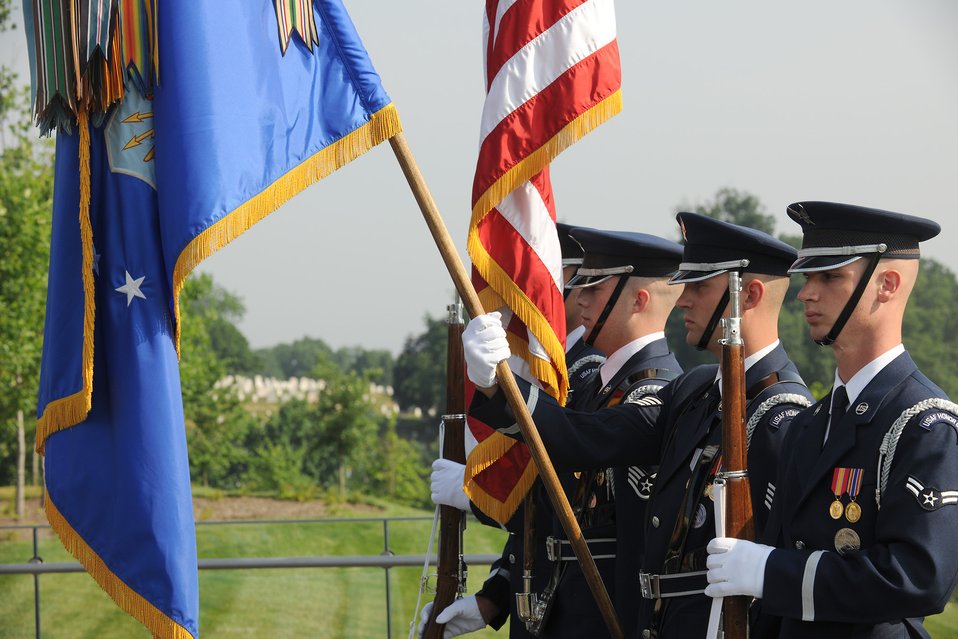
CMSAF Reads Honors Fallen on Memorial Day

The U.S. Air Force Honor Guard's color team stands at attention during the playing of the national anthem at a Memorial Day ceremony May 30, 2011, honoring Airmen who gave their lives in the past year. The ceremony was at the Air Force Memorial in Arlington, Va., and hosted by the Air Force Association and the Air Force Sergeants' Association. Chief Master Sgt. of the Air Force James Roy read the names of each of Airmen who were lost in combat during the ceremony.